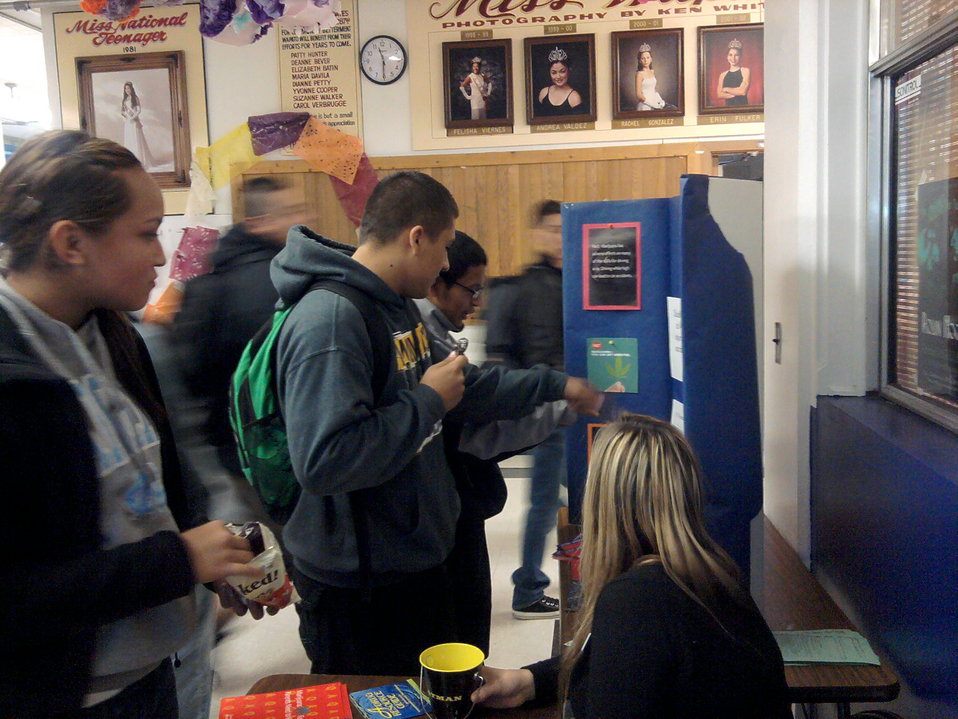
Wapato High school participates by having a “Question of the Day” contest to see which of the 2 lunches could answer the most drug facts questions correctly.